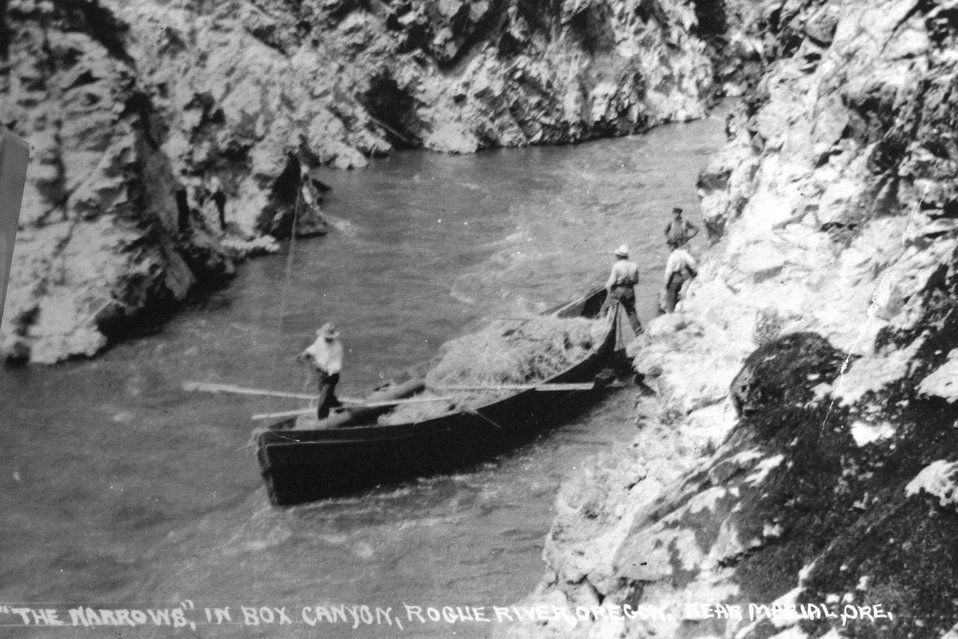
The Narrows in Box Canyon Rogue River